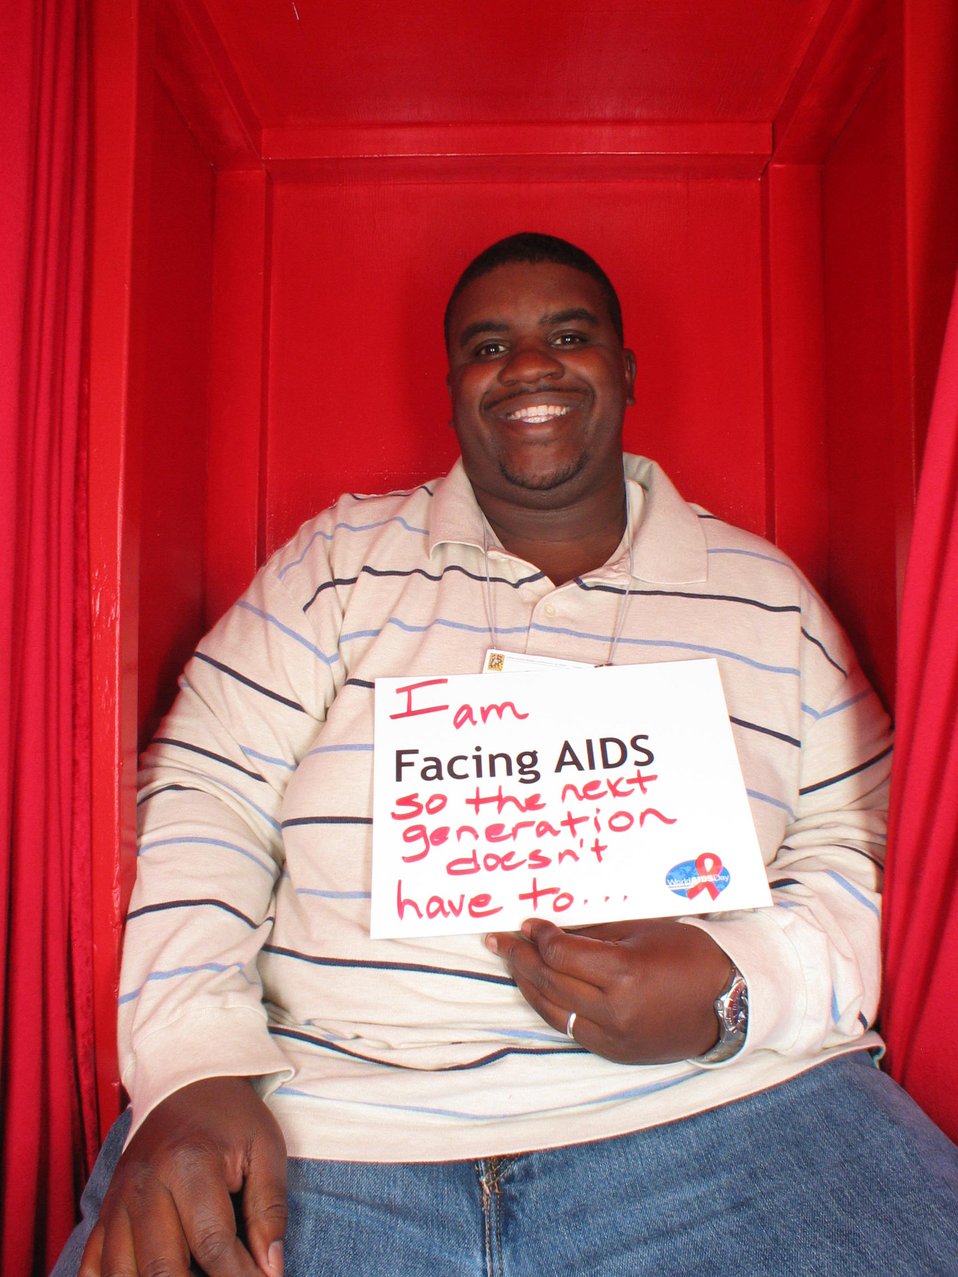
I am Facing AIDS so the next generation doesn't have to...